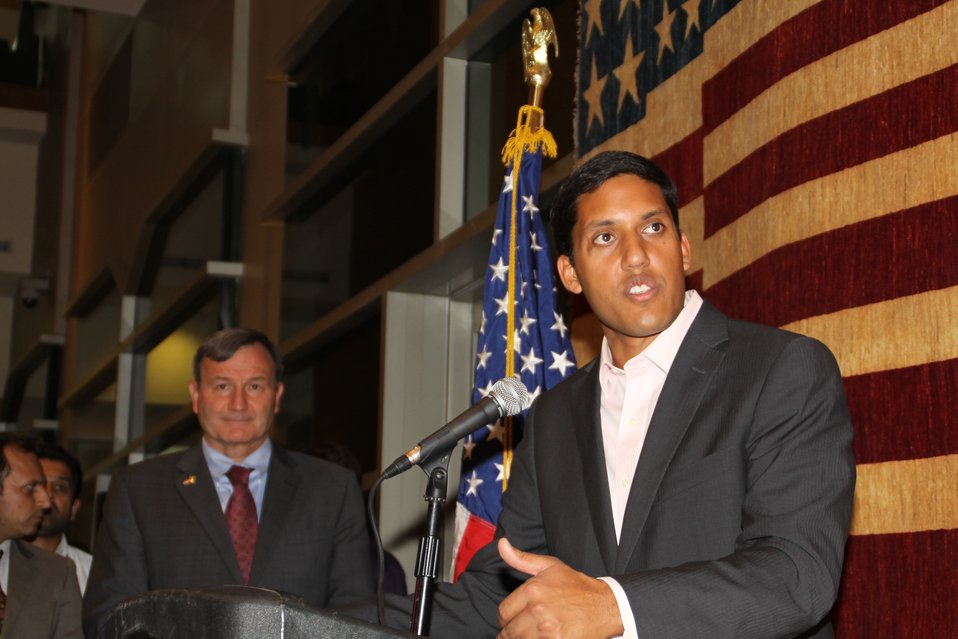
US Embassy Town Hall July 21, 2010